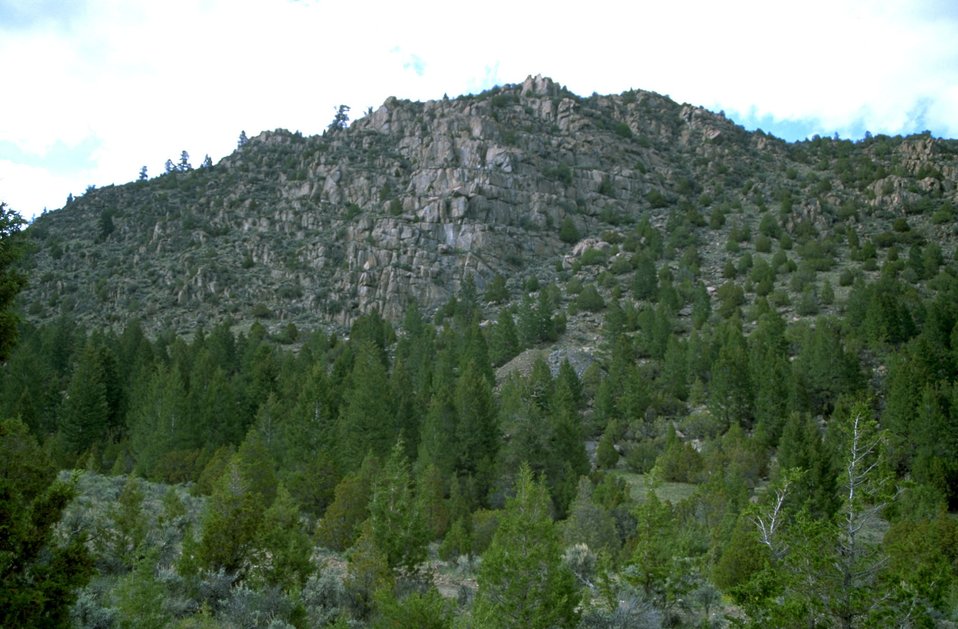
Rocky hillside